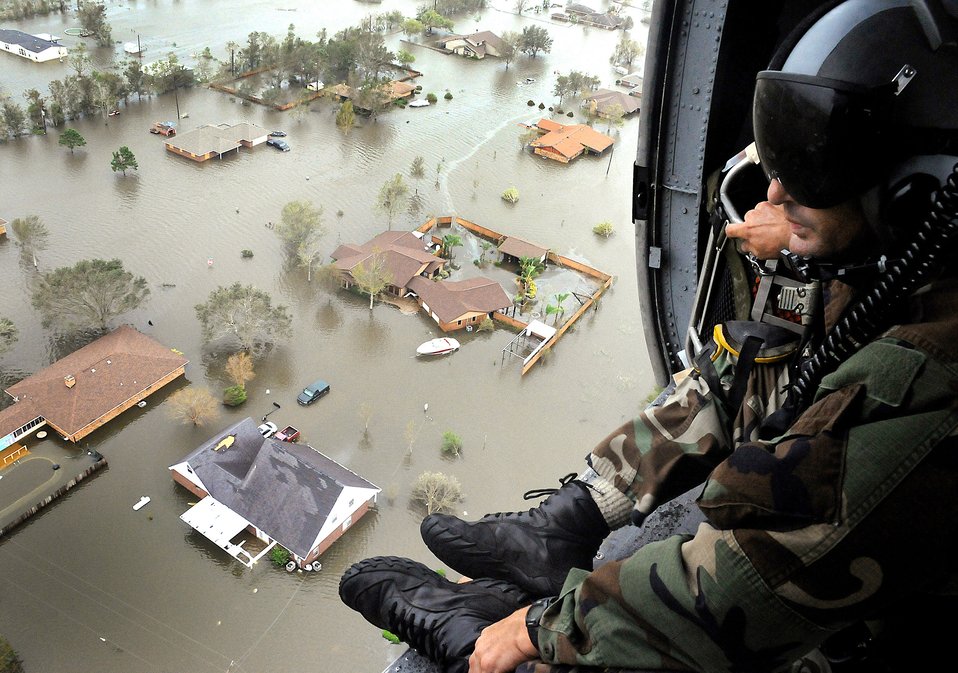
Looking for signs of life

An Air Force Reserve pararescueman from the 920th Rescue Wing scans the ravaged Texas landscape in the aftermath of Hurricane Ike. Deployed with aircrews and aircraft from Patrick Air Force Base, Fla., the pararescuemen rescued 17 people Sept. 13 from the small town of Nederland.